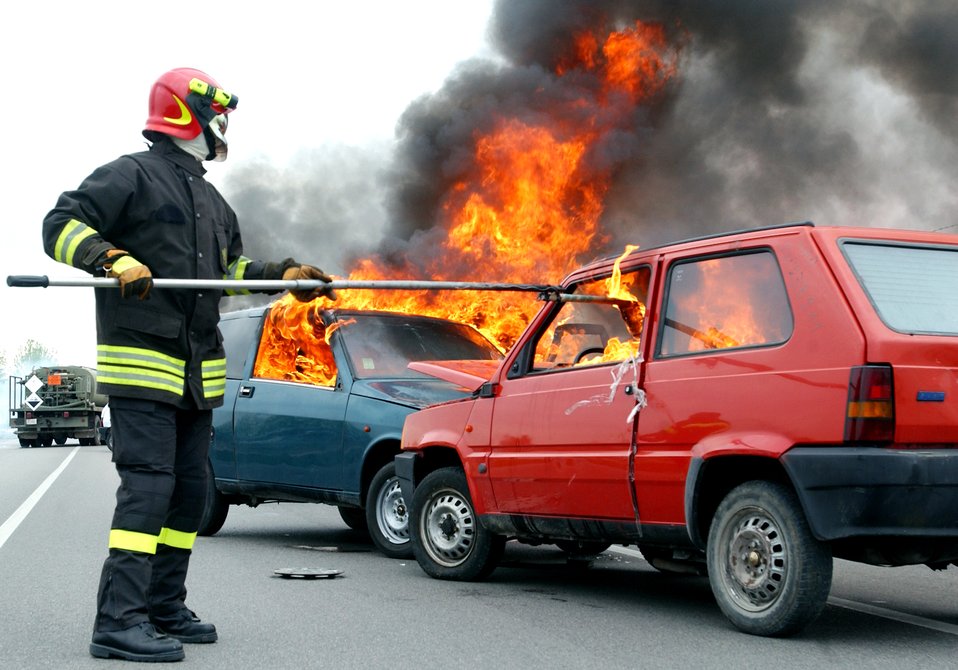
Joint training develops seamless response

An Italian fireman lights a car on fire for an American-Italian exercise on Thursday, May 4, 2006. Responders from various Italian fire and police departments and medical facilities joined those from the 31st Fighter Wing fire department, hospital and security forces at Aviano Air Base, Italy, for a mass accident exercise. The purpose of the exercise is to develop a seamless response capability between Italian and American emergency professionals.